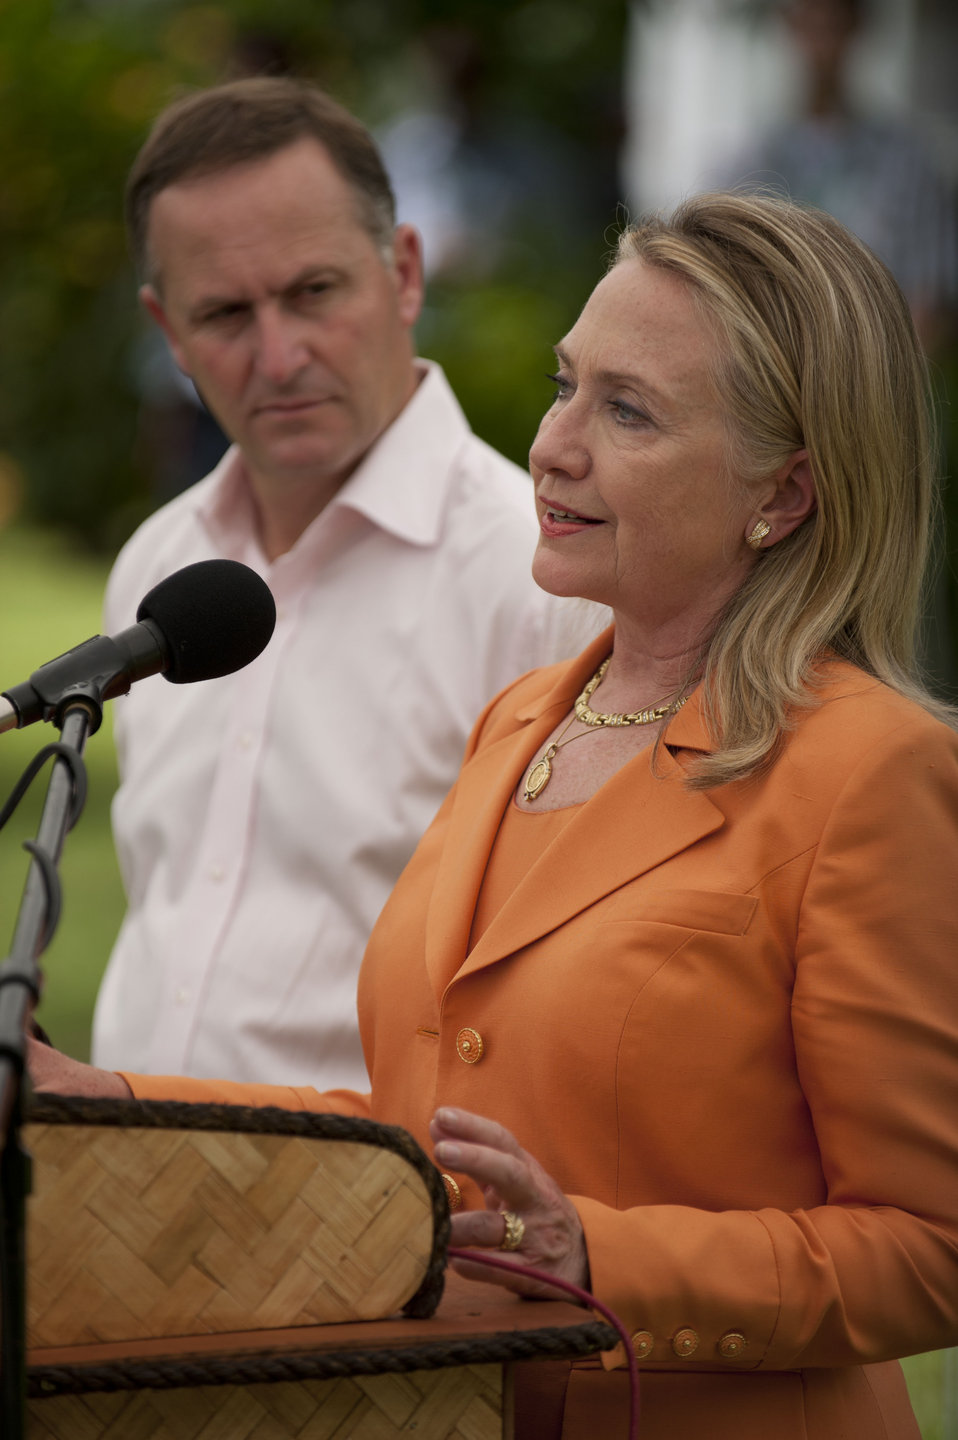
Secretary Clinton Speaks at Press Availability During Pacific Islands Forum

U.S. Secretary of State Hillary Rodham Clinton and Prime Minister John Key of New Zealand participate in a joint press availability at the Pacific Islands Forum in Rarotonga, Cook Islands, August 31, 2012.